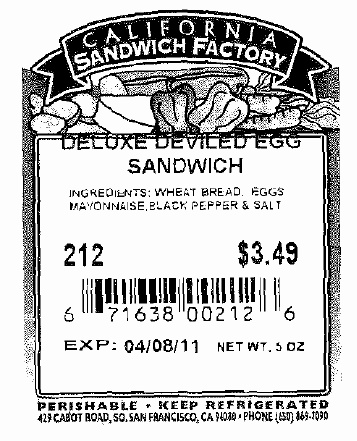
RECALLED - Sandwiches

April 12, 2011 - Product Recall - A-1 Sandwich Company Voluntarily Recalls Sandwiches with Undeclared Allergens.